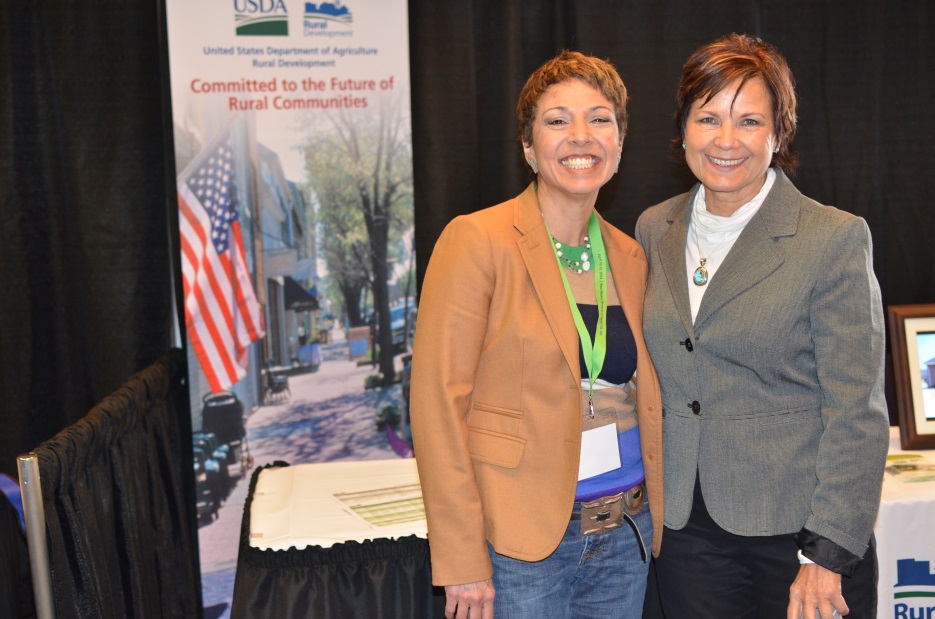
Strike Force Photo 2

Native community development financial institutions (CDFI) Lakota Fund Executive Director Tawney Brunsch and U.S. Department of Agriculture (USDA) Rural Development (RD) South Dakota State Director Elsie Meeks at the StrikeForce conference held at the bi-annual South Dakota Indian Business Alliance Conference held in Rapid City, SD.